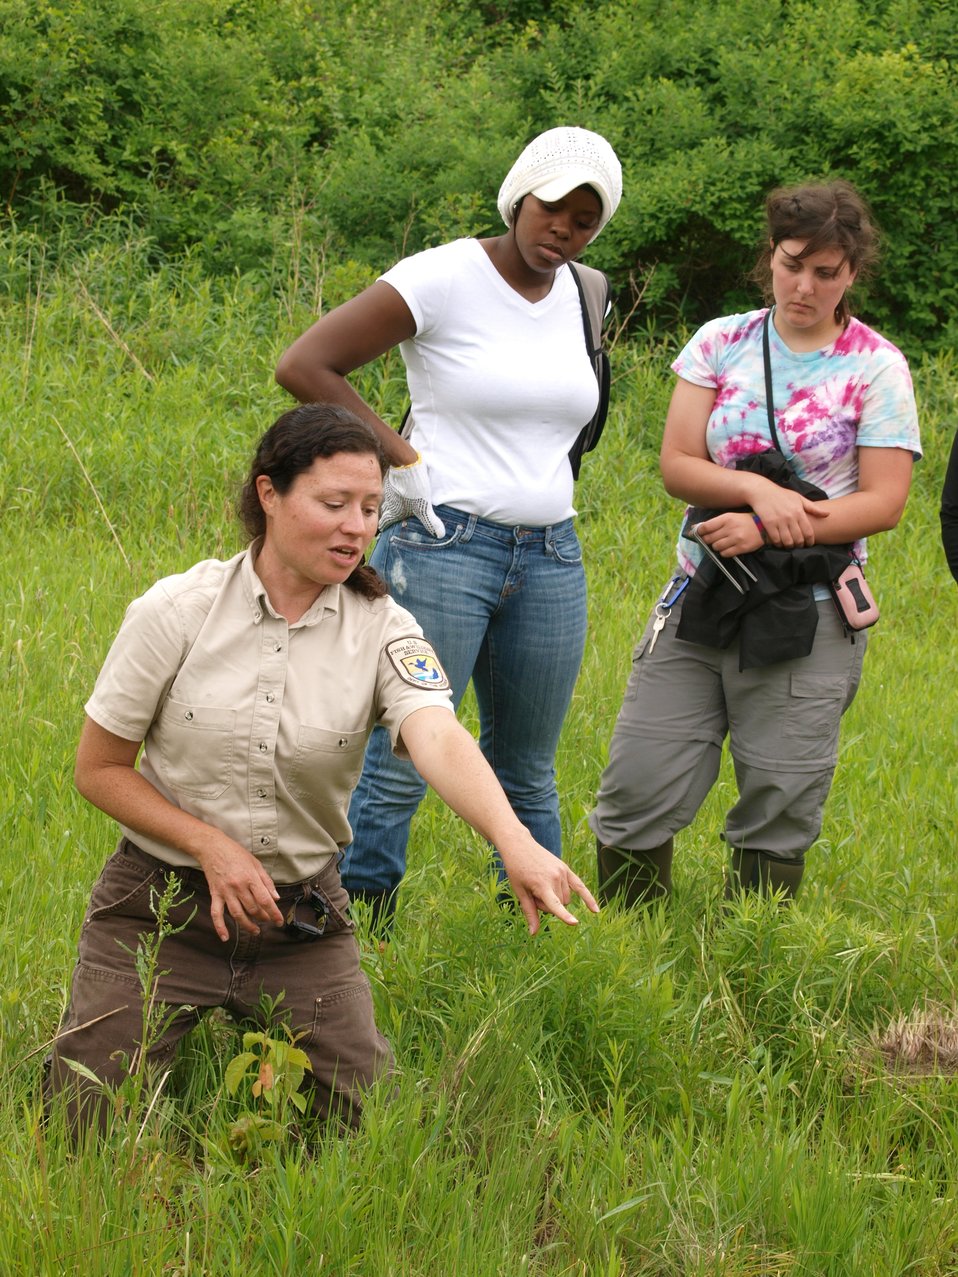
A teachable moment in the field.

CIP Students learning about the local flora.